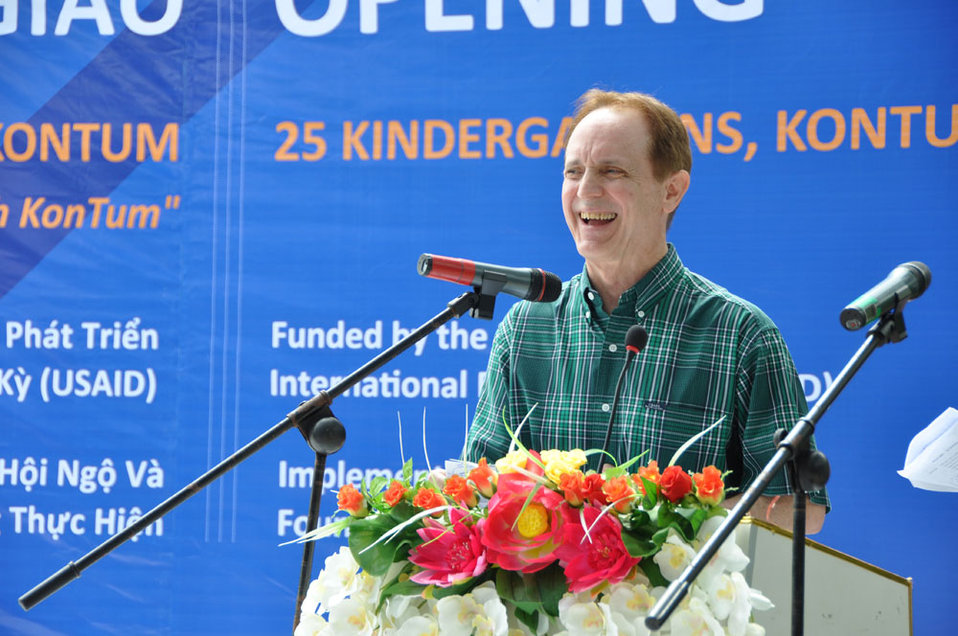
USAID Mission Director Francis Donovan addresses the kindergarten handover ceremony in June 16, 2011.